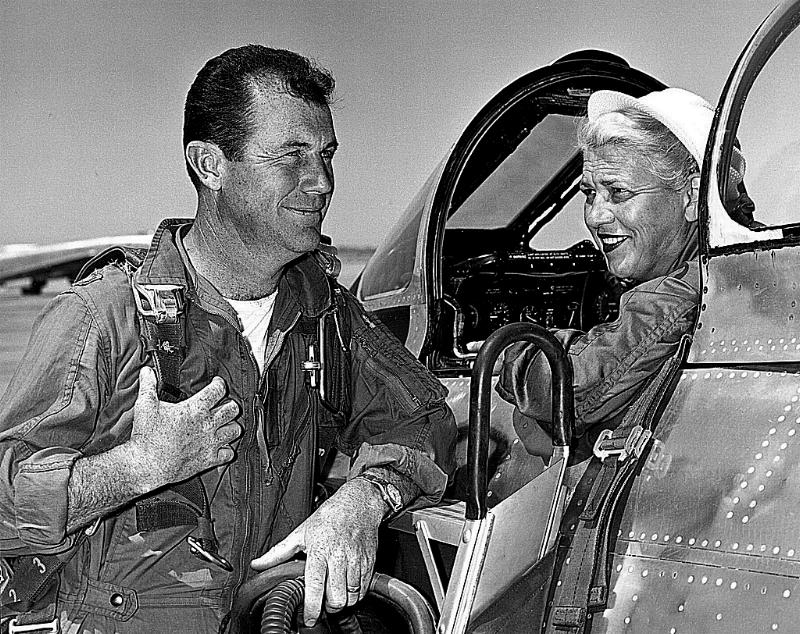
Jackie Cochran in the cockpit of the Canadair F-86 with Chuck Yeager.